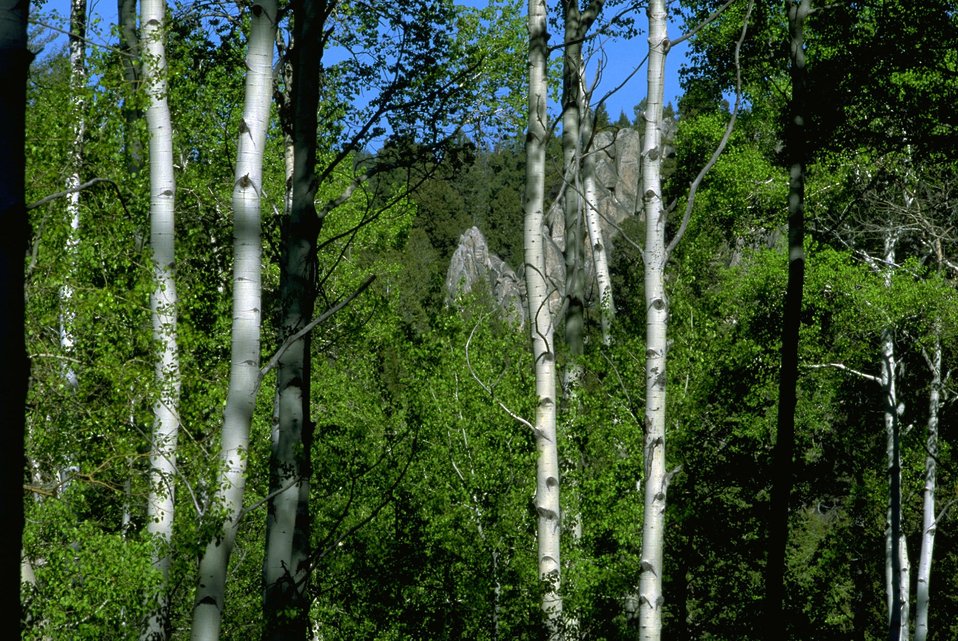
Rock formation peeking through the dense Aspen trees